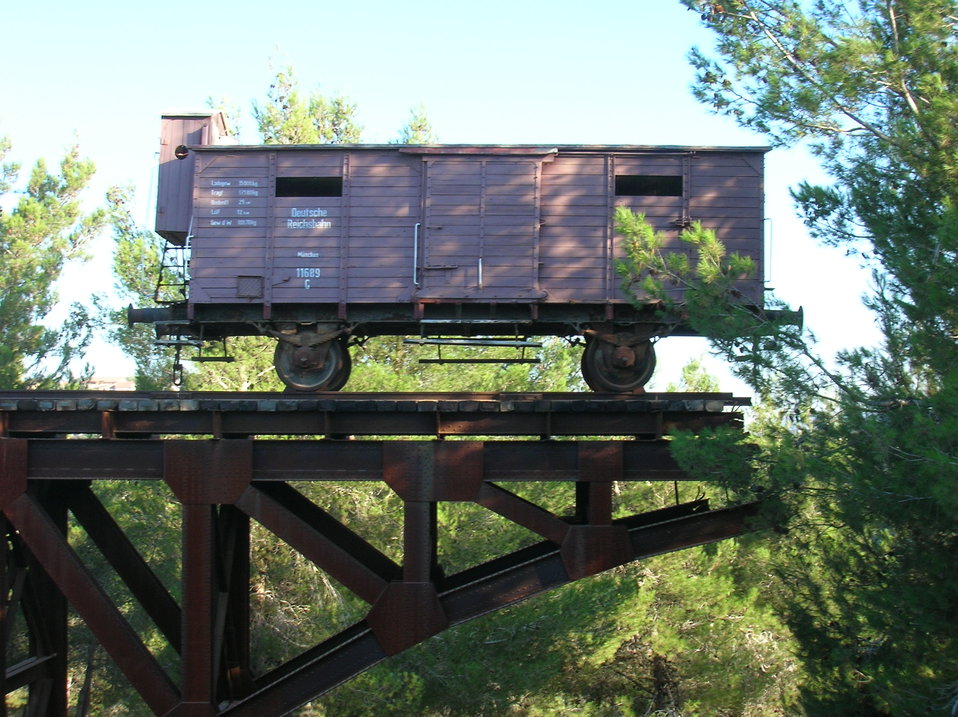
YadVashem Train Car